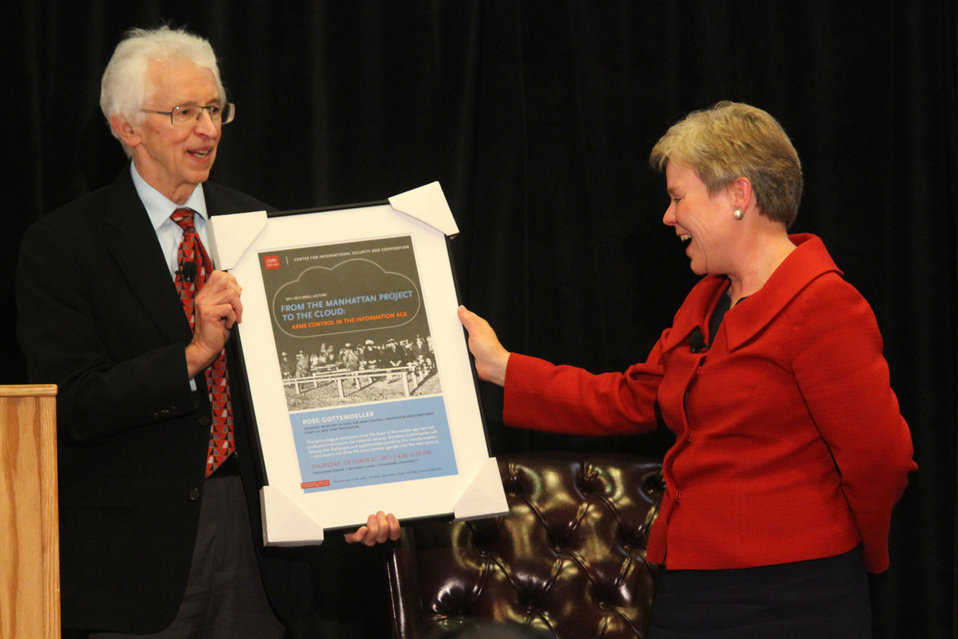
Assistant Secretary Gottemoller Is Presented an Award

Assistant Secretary of State for Arms Control, Verification and Compliance Rose Gottemoeller is presented an award by the Center for International Security and Cooperation (CISAC), part of the Freeman Spogli Institute for International Studies (FSI), in Stanford, California, on October 27, 2011.